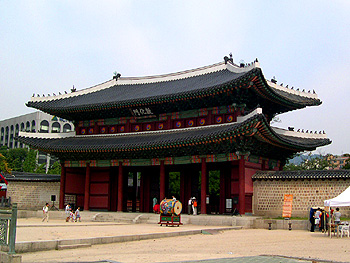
서울, 창덕궁 돈화문 (漢城, 昌德宮, 敦化門) zh:User:Prattflora自己拍摄和上传的，他将来源的注释放错地方了。就此说明。--Wing 12:21 2004年9月22日 (UTC)